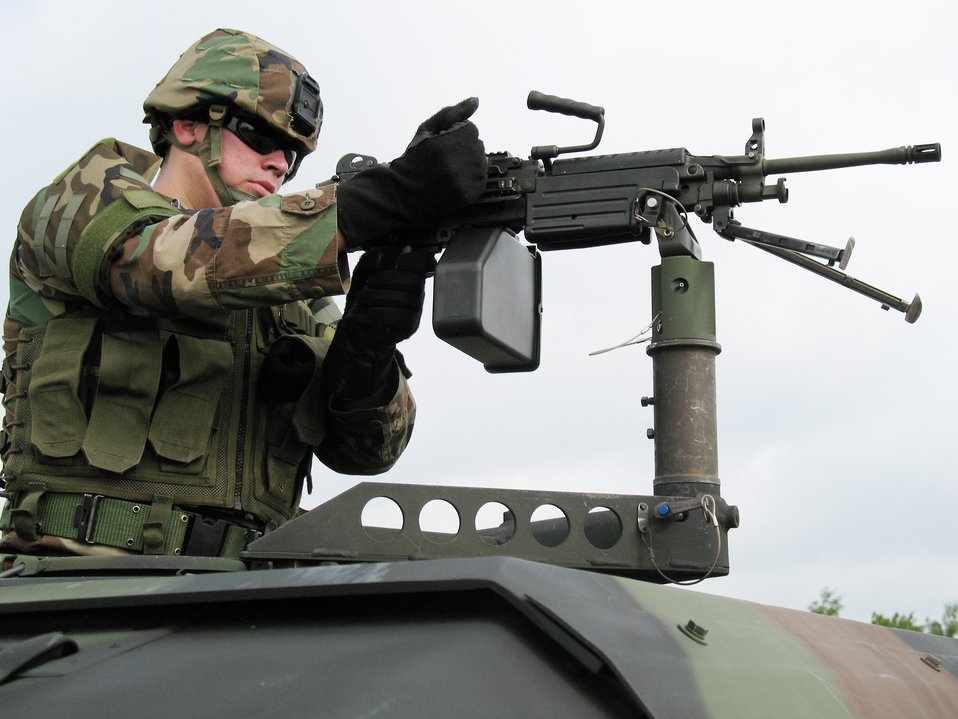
Creek Defender preps security forces for potential battle

A security forces Airman prepares to fire at his next target as part of the live fire simulation at the Creek Defender exercise held May 30 at Baumholder, Germany. Airmen first learn to fire at stationary targets from a moving convoy of Humvees, to prepare them for real-world scenarios.